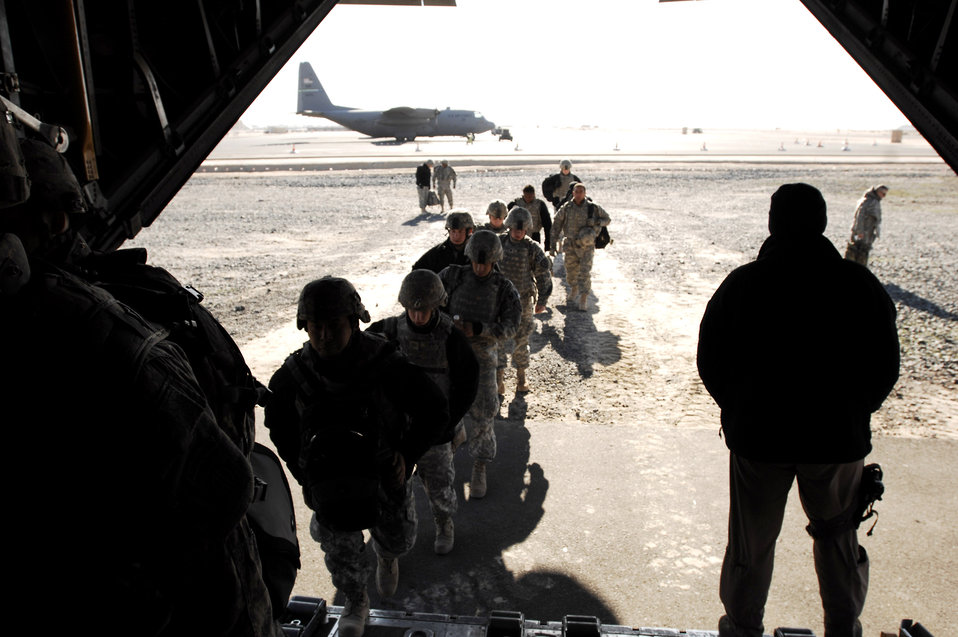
Feb. 4 airpower summary: C-130s provide support for coalition

Soldiers enter a C-130H Hercules on Feb. 4, at an air base in the Southwest Asia. The Soldiers are heading to locations throughout the area of responsibility for Operation Iraqi Freedom.